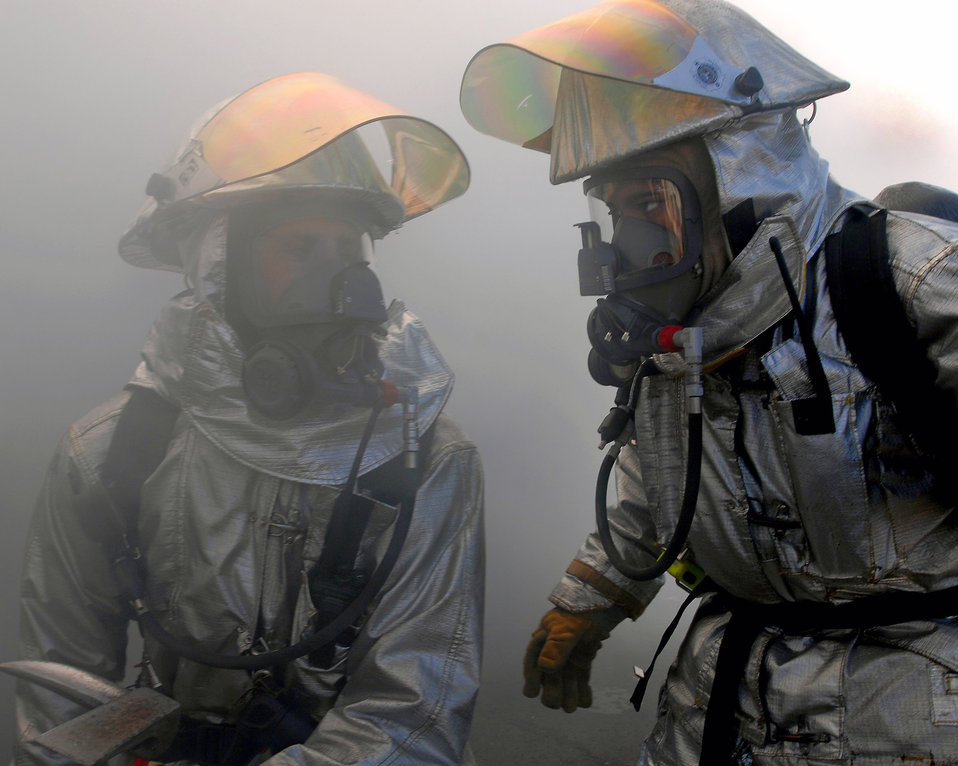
Ramstein firefighters train in mass casualty exercise

Firefighters participate in a mass casualty exercise Feb. 11 at Ramstein Air Base, Germany. The scenario involved victims trapped in a burning building. The victims consisted of 20 volunteers from the First Term Airman's Center.